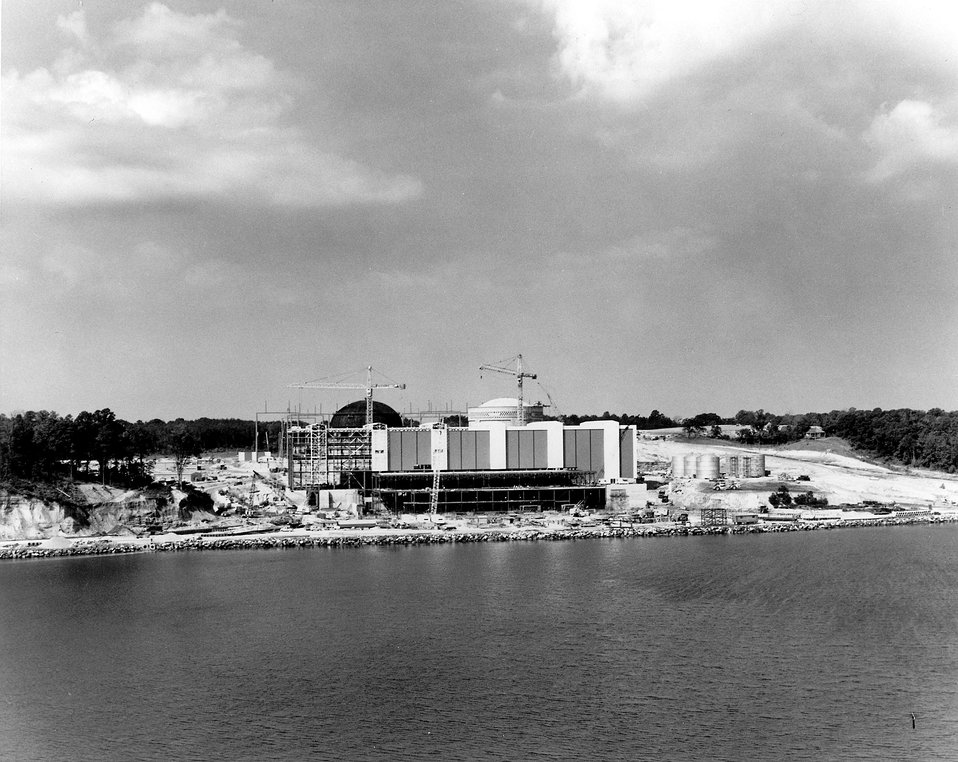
View of Baltimore Gas and Electric's Calvert Cliffs Nuclear Power Plant taken on June 11, 1971. Circa 1971.